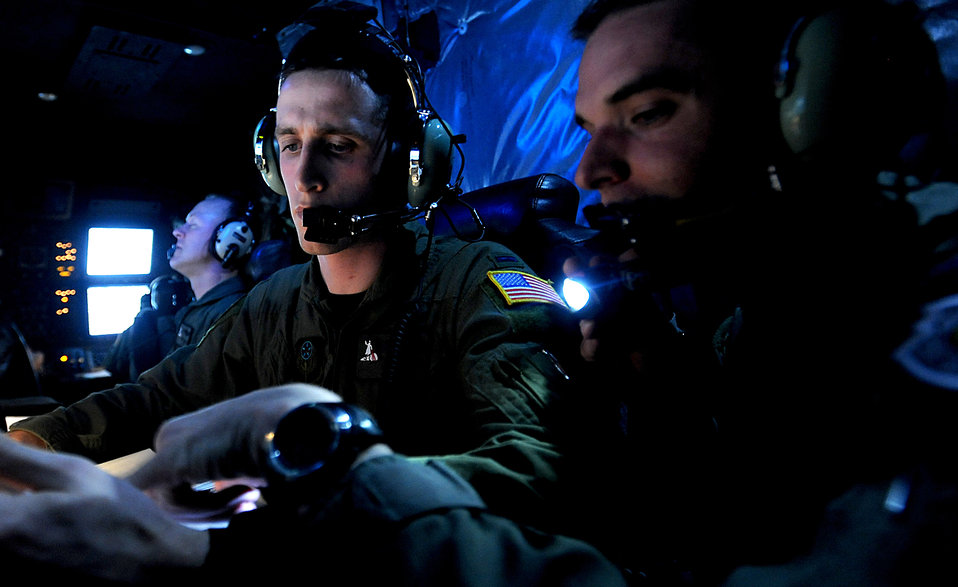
On the job training

1st Lt. John Sharman (left) and Senior Airman Tom Coyle participate in a training mission aboard an AC-130U Spooky Feb. 3, 2011, at Hurlburt Field, Fla. Lieutenant Sharman and Airman Coyle are aircrew members assigned to the 4th Special Operations Squadron.